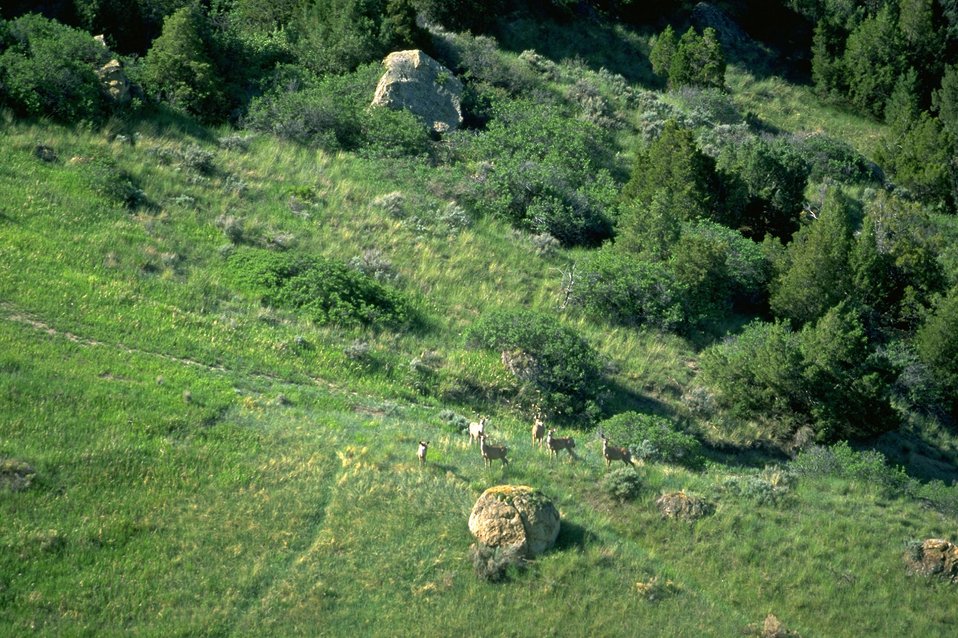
Mule Deer on the trail decending to the Yellowstone River in the Four Dances Natural Area